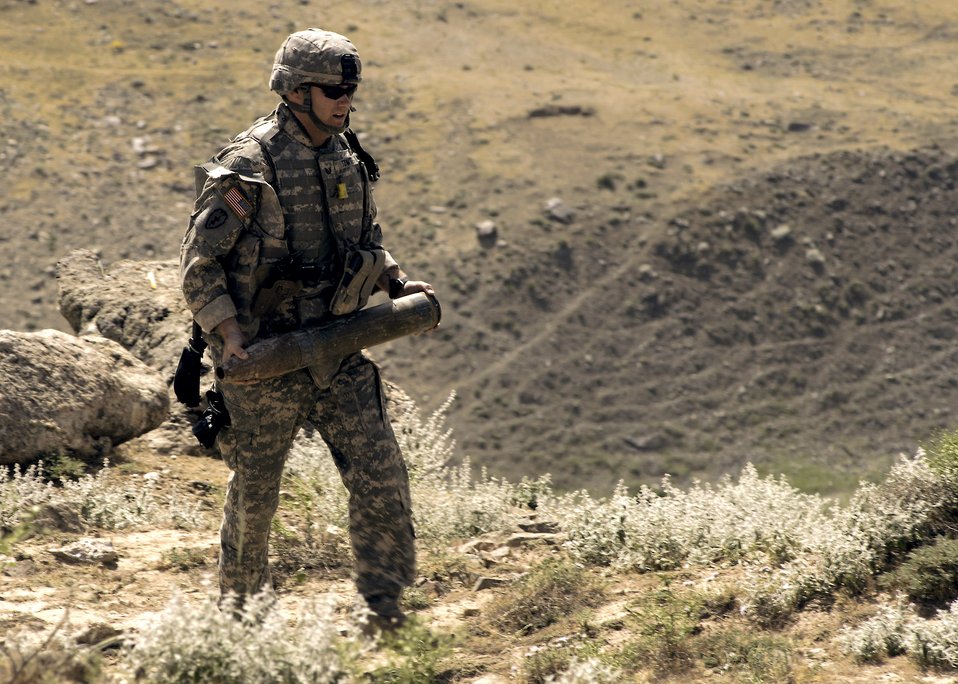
Coalition forces, local government thwart IED in Panjshir

Tech. Sgt. Jay Tomten transports a rocket to a safe disposal area for detonation after a local farmer alerted authorities when he found two 107mm rockets. Sergeant Tomten is deployed as an 755th Air Expeditionary Group Explosive Ordnance Disposal team leader.